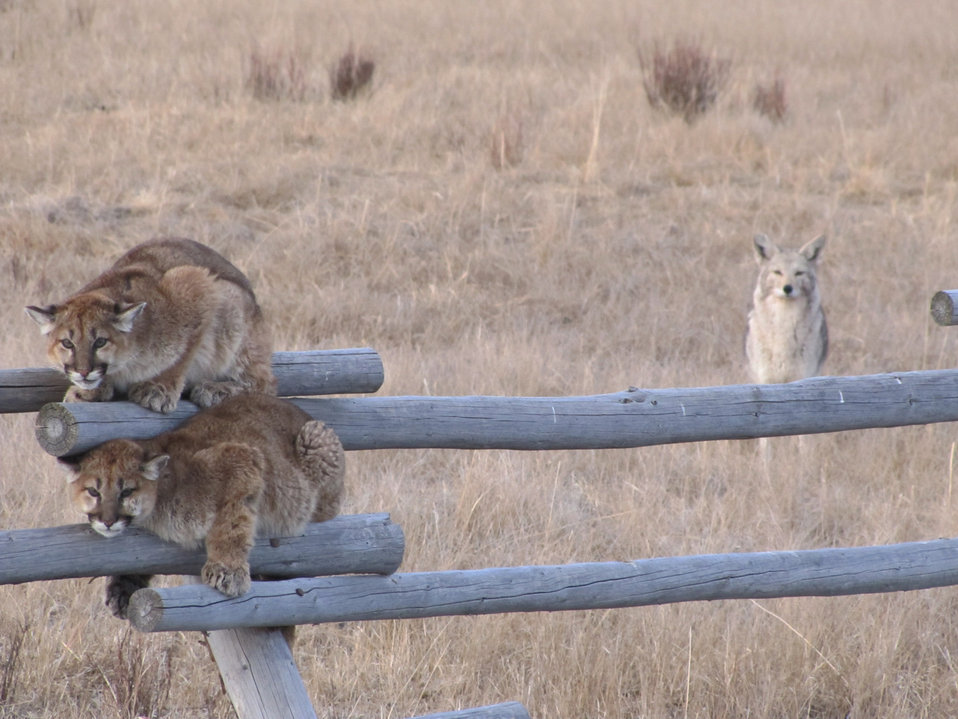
Moving Closer

One in a series of seven photos:

The National Elk Refuge's Outdoor Recreation Planner witnessed a spectacular standoff between two juvenile mountain lions and five coyotes. The coyotes let the cats know they weren’t welcome in the area. The mountain lions sought safety on a buck and rail fence for over an hour while the coyotes lurked in the background.

Here, one of the coyotes has moved in closer. Notice the flattened positions of the mountain lions.

Credit: Lori Iverson / USFWS

This photo series has gone viral! Join the discussion on our Facebook page: www.facebook.com/photo.php?fbid=595246397154972&set=a...